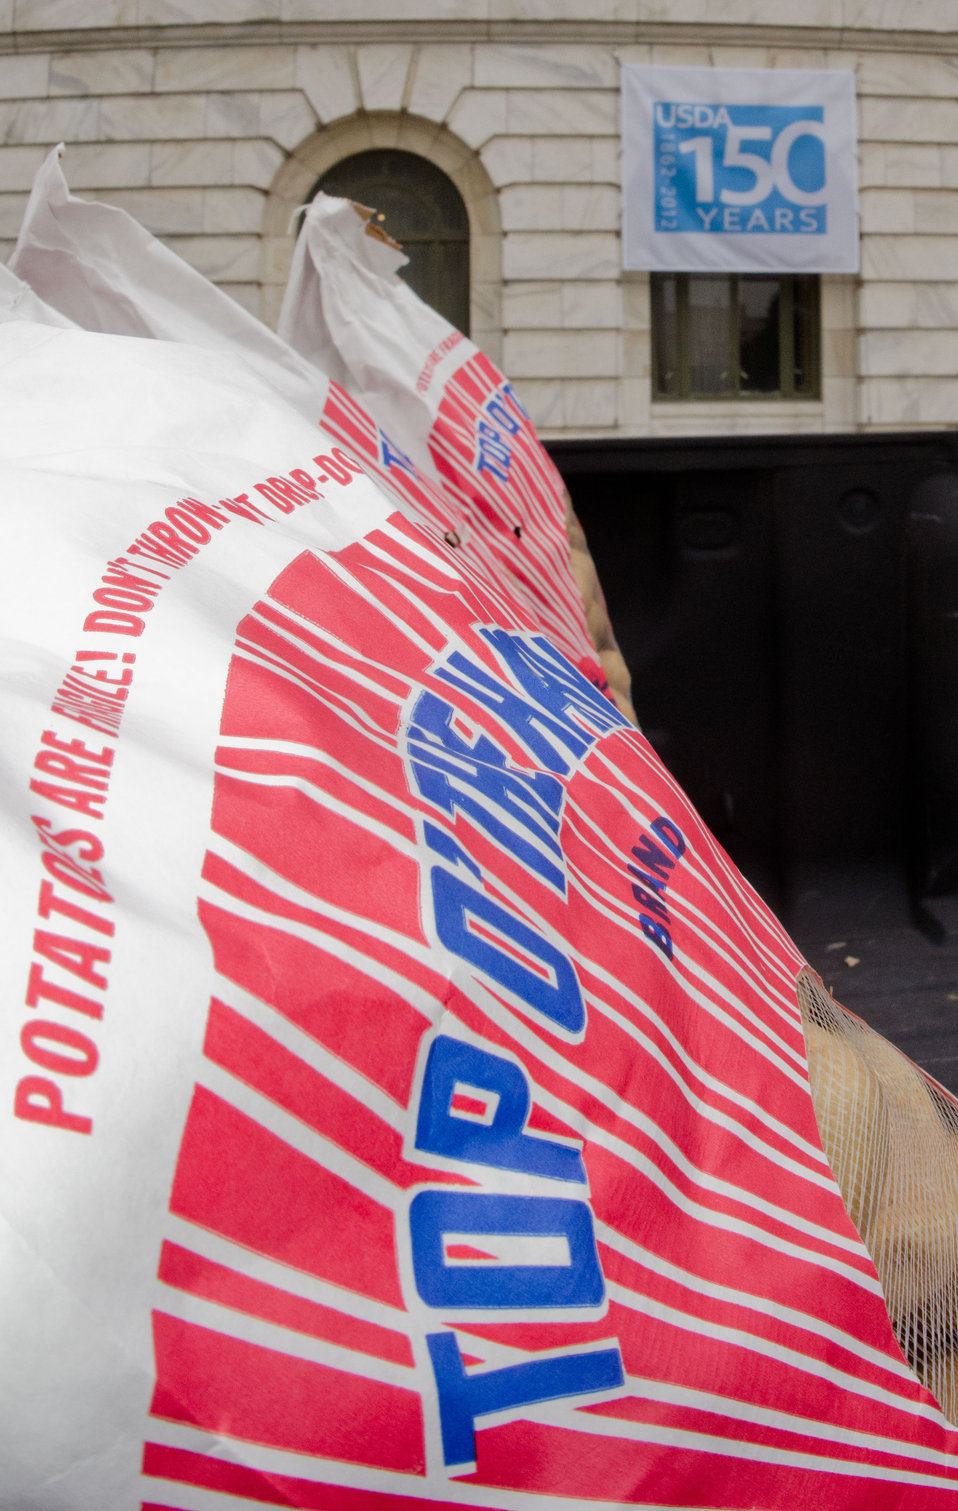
Agriculture Under Secretary for Farm and Foreign Agriculture Service (FFAS) Michael Scuse donates 1,000 pounds of potatoes to DC Central Kitchen, for the Feds Feed Families Food Drive, on Monday, August 20, 2012 in front of the Agriculture headquarters in Washington, D.C. Under Secretary Scuse, a farmer himself purchased the half-ton of potatoes at Wicks farm, near his own farm, in Delaware.